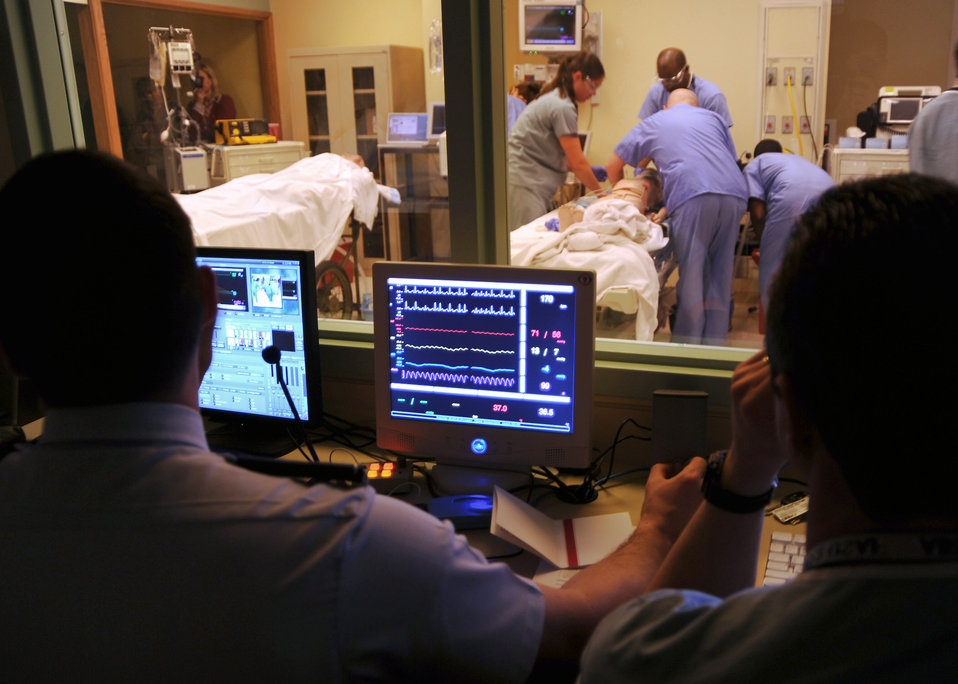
Training gives medics confidence prior to deployments

Instructors monitor patient blood pressure and vital signs during a simulation at the newly opened Emergency Trauma Simulation Lab Feb. 17 at the St. Louis University Hospital in Missouri. During varying scenarios, instructors can instantly change a patient's vital signs to see how the students react to a situation.